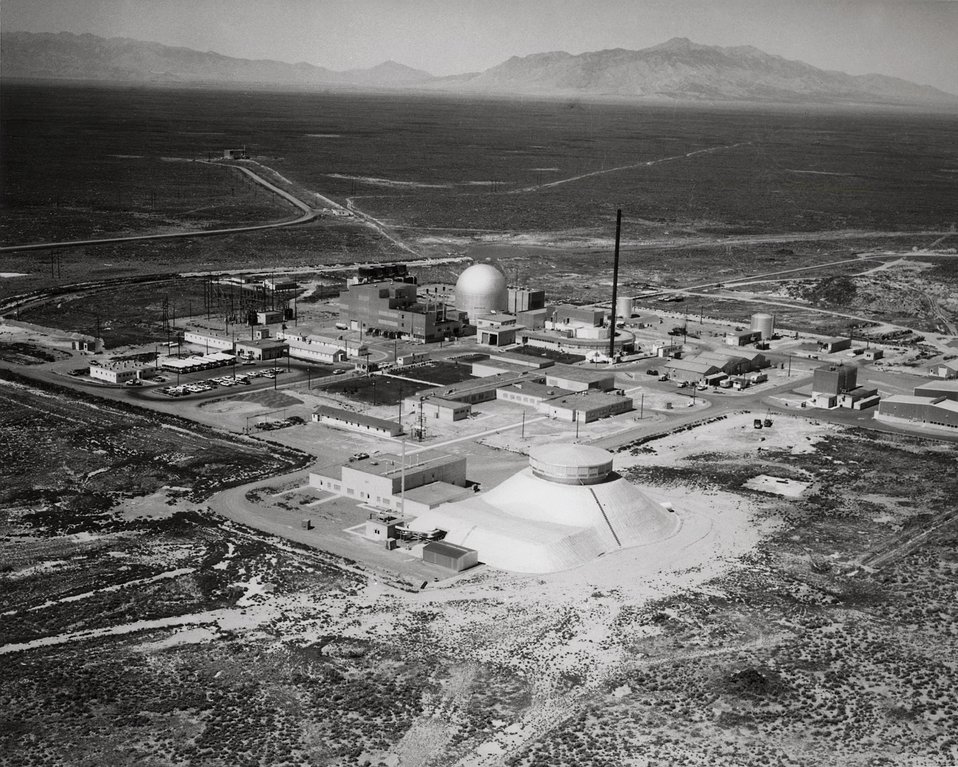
Argonne's Experimental Breeder Reactor II in Idaho.
c.1974